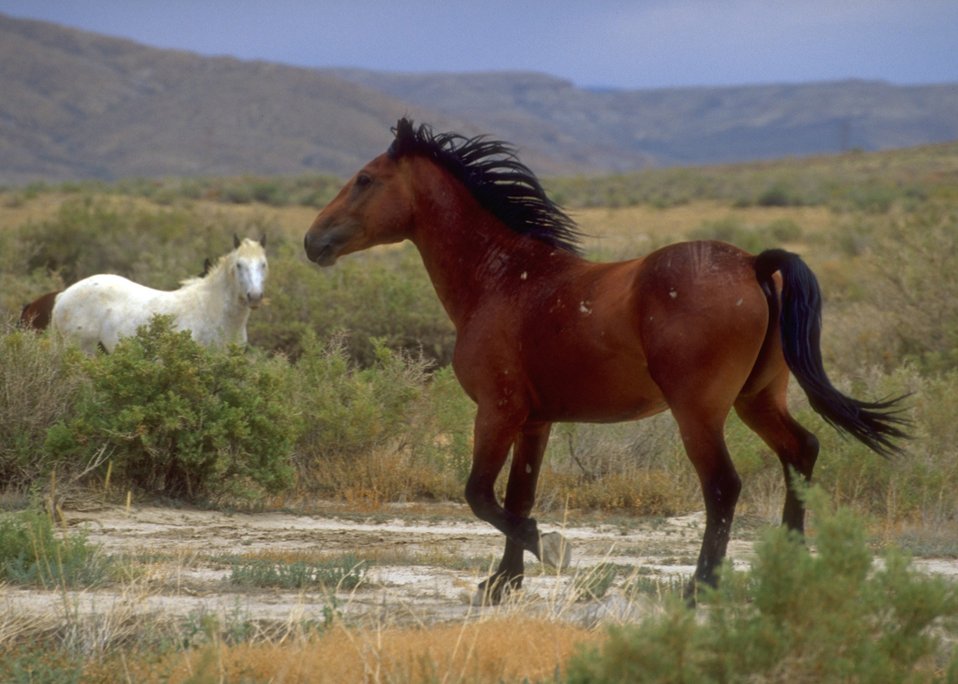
Wild horses, Rock Springs Field Office.